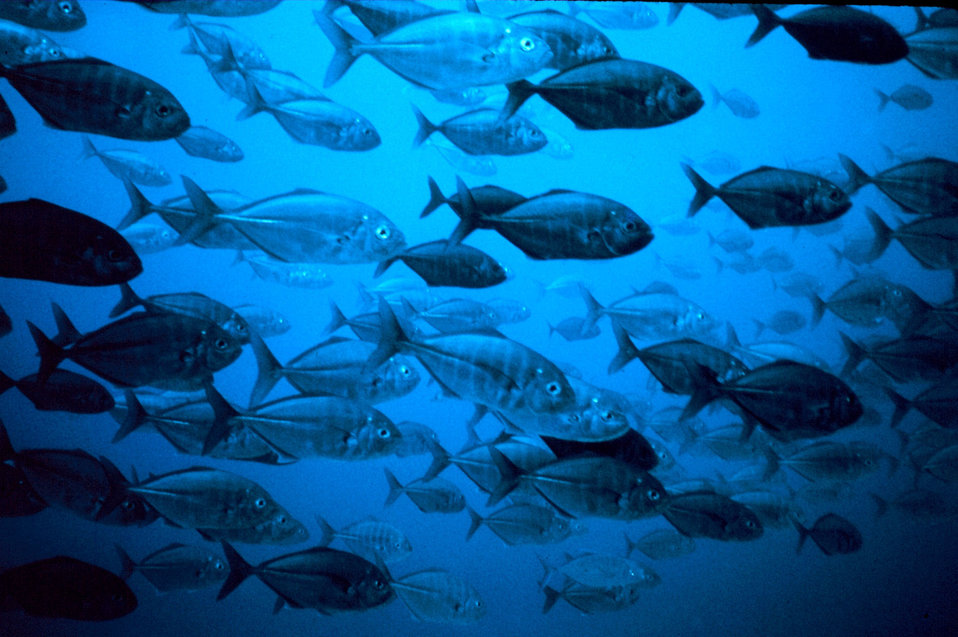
Possibly a mating congregation of jacks - males darker. Jacks are a high-level inshore predator built for speed